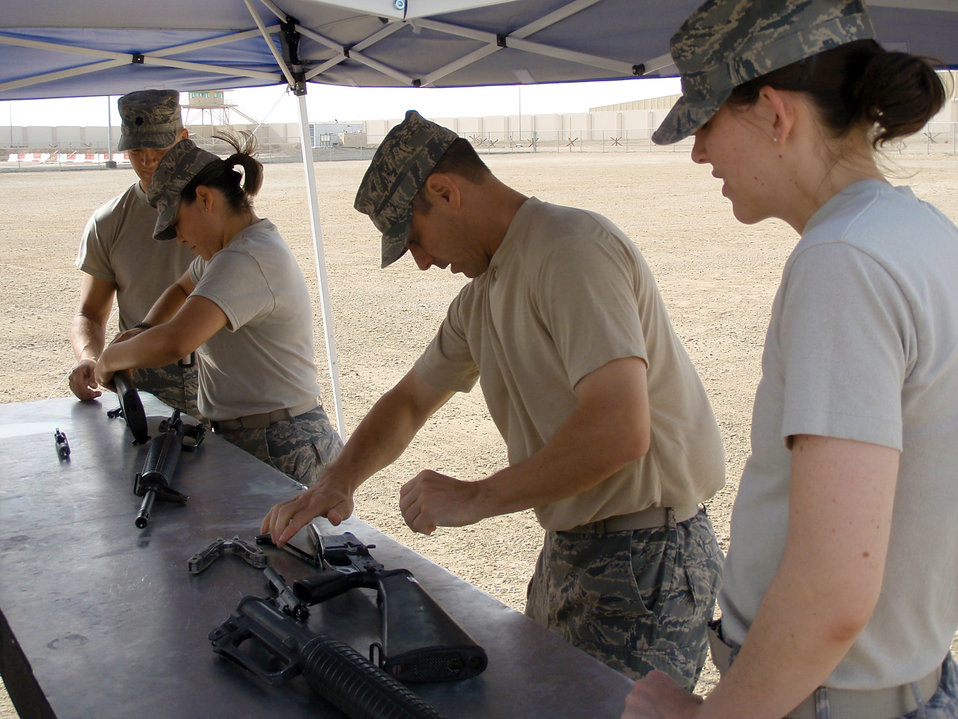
Challenge pushes Airmen, Soldiers

Staff Sgt. Christian Johnson and Master Sgt. James Gantar take an M-16 rifle apart as teammates Lt. Col. Fredrick Thaden and 1st Lt. Miranda Thompson look on during on a Defender Challenge event April 25 at an air base in Southwest Asia. Each team had to dismantle and put back together an M-16 as fast as they could. Sergeant Gantar is deployed from Grand Forks Air Force Base, N.D., and hails from Girard, Ohio. Sergeant Johnson is deployed from Tyndall AFB, Fla., and hails from Brownsville, Texas. Lieutenant Thompson is deployed from Malmstrom AFB, Mont., and hails from Fleshing, Ohio. Colonel Thaden is a permanent party member at the 380th Air Expeditionary Wing and hails from Utah. All are assigned to the 380th Expeditionary Mission Support Group.